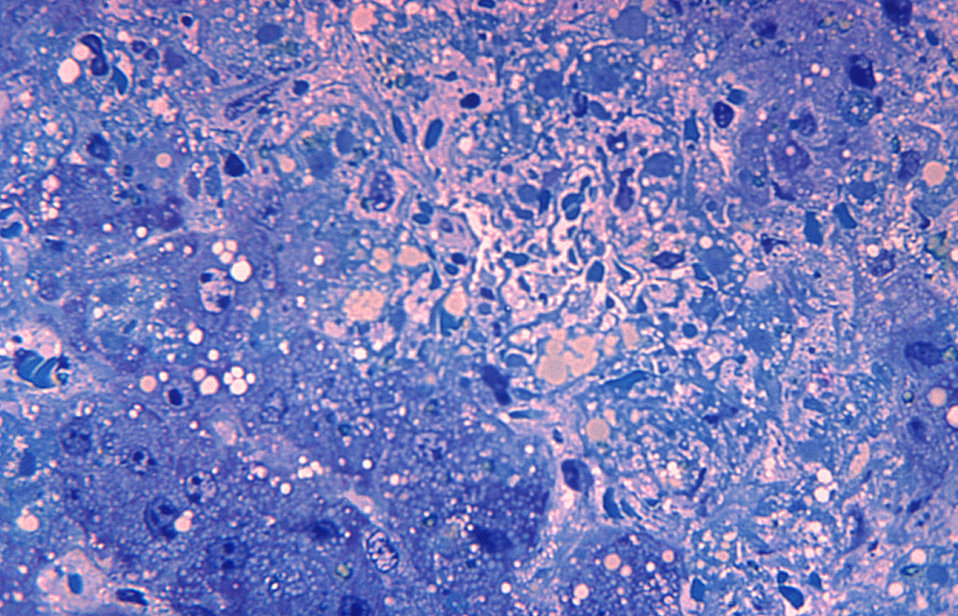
A photomicrograph of hepatitis caused by the Lassa virus, using toluidine-blue azure II stain, magnified 500X.